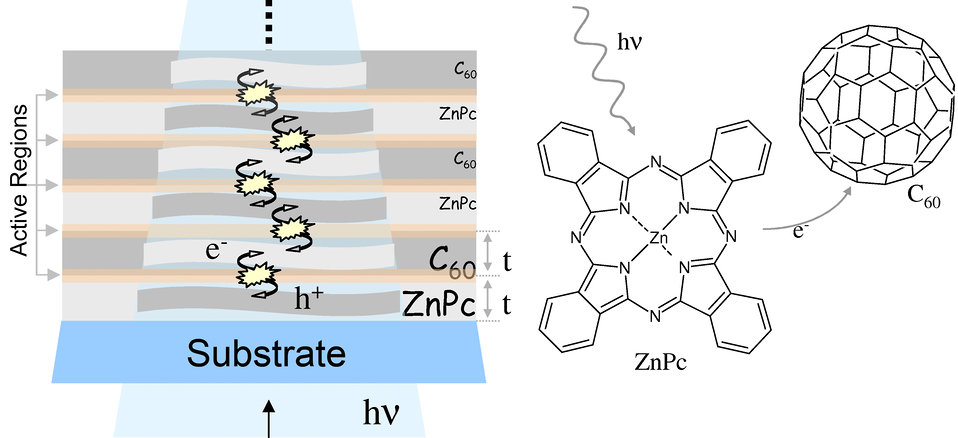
Solar Cell

Light that strikes this organic solar cell causes electrons to flow between its layers, creating an electric current. Measurements made by the NIST/NRL research team determined the best thickness for the layers, a finding that could help optimize the cells' performance.